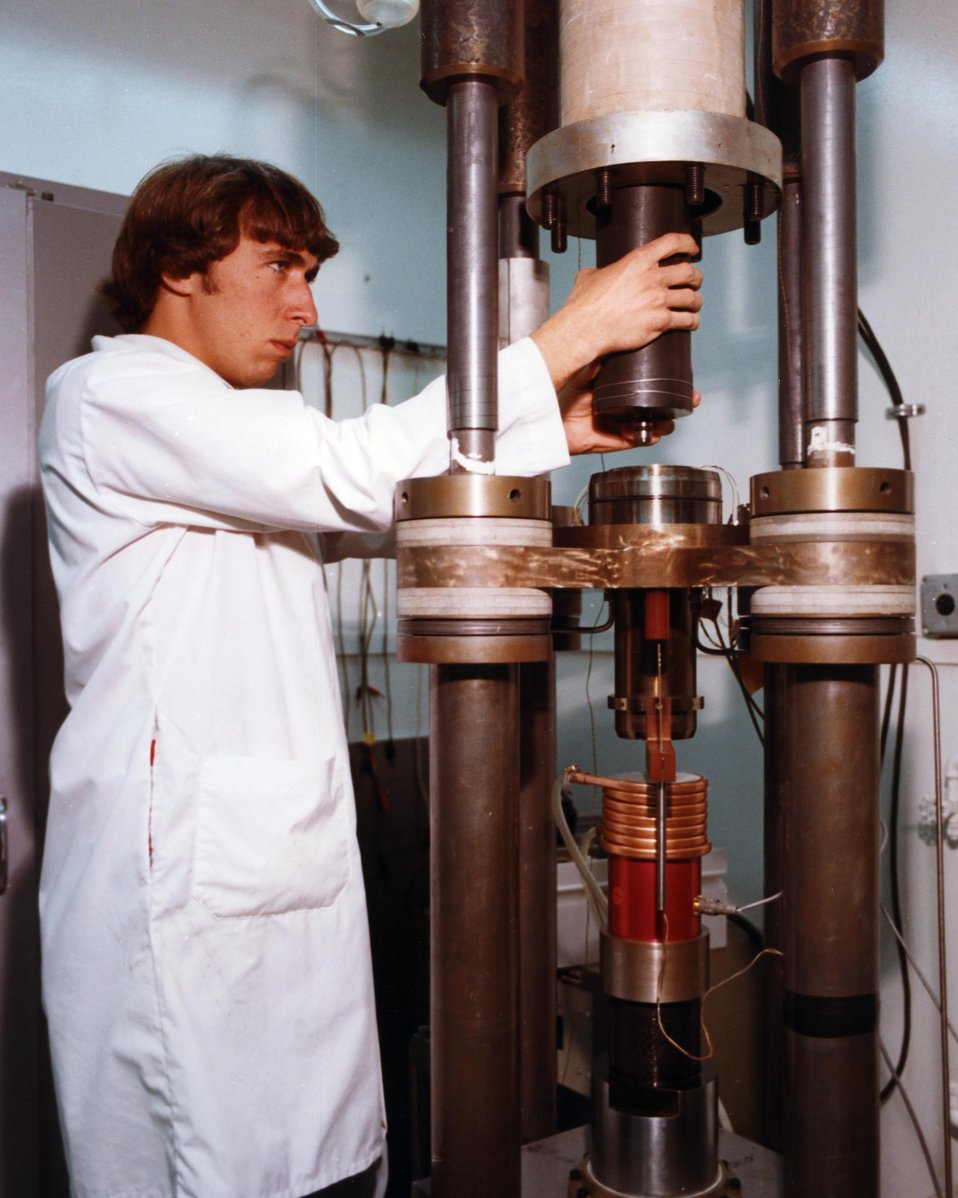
TECHNICIAN IS PLACING 8-INCH LONG SALT CYLINDERS IN COMPRESSION APPARATUS.

THE COMPRESSION APPARATUS WAS DESIGNED AT SANDIA NATIONAL LABS TO SQUEEZE AND HEAT A SALT SAMPLE. ENGINEERS AT SANDIA ARE INVOLVED IN A VARIETY OF TESTS TO LEARN MORE ABOUT THE MECHANICAL BEHAVIOR OF SALT SAMPLES FROM THE WASTE ISOLATION PILOT PLANT (WIPP) STUDY SITE IN SOUTHEASTERN NEW MEXICO. ATYPICAL TEST INVOLVES HEATING A SAMPLE TO ABOUT 400 DEGREES FAHRENHEIT FOR SEVERAL MONTHS WHILE SUBJECTING IT TO PRES- SURE OF 1500 PSI AND AN ADDITIONAL 40,000 PSI AXIAL LOAD.